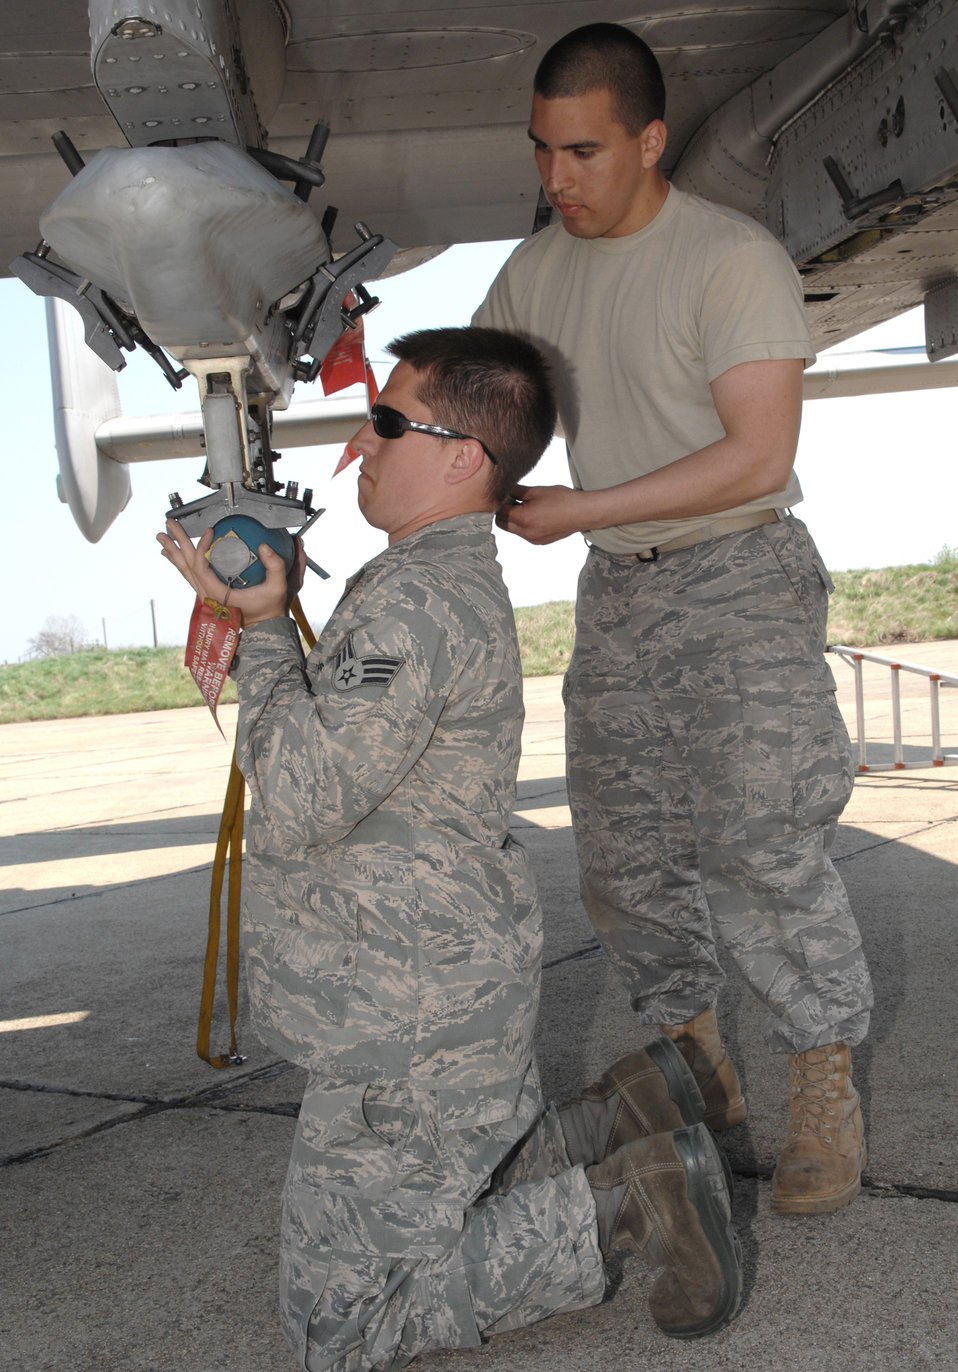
Airmen turn empty Bulgarian hangar into A-10 hub

Airman John Medina assits Senior Airman Ryan Wooley in loading a practice bomb onto an A-10 Thunderbolt II preparing to depart on a training missionApril 16 at Bezmer Air Base, Bulgaria. A maintenance squadron team deployed to Bezmer AB to support a U.S. and Bulgarian air forces training exercise. Airmen Medina and Wooley are 52nd Aircraft Maintenance Squadron weapons load crewmembers.